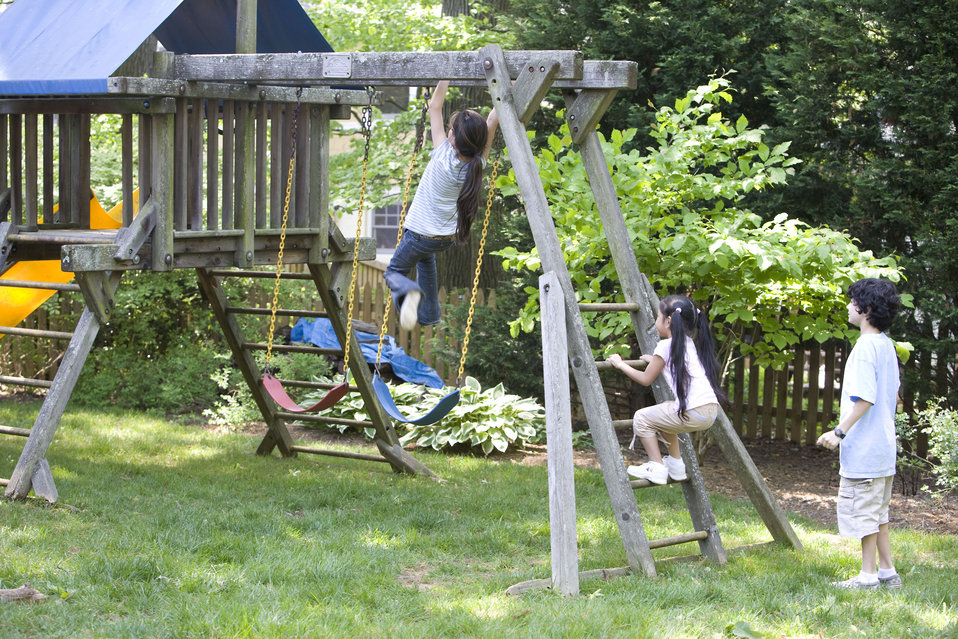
Children love playing outside, and these children were thoroughly enjoying their wooden swing set, and all were having fun in the fresh outdoor air, and the beautiful weather. It's important to note that older wooden playsets may have been treated with arsenic and/or creosote, and therefore, parents need to know if these chemicals were used in their manufacture.